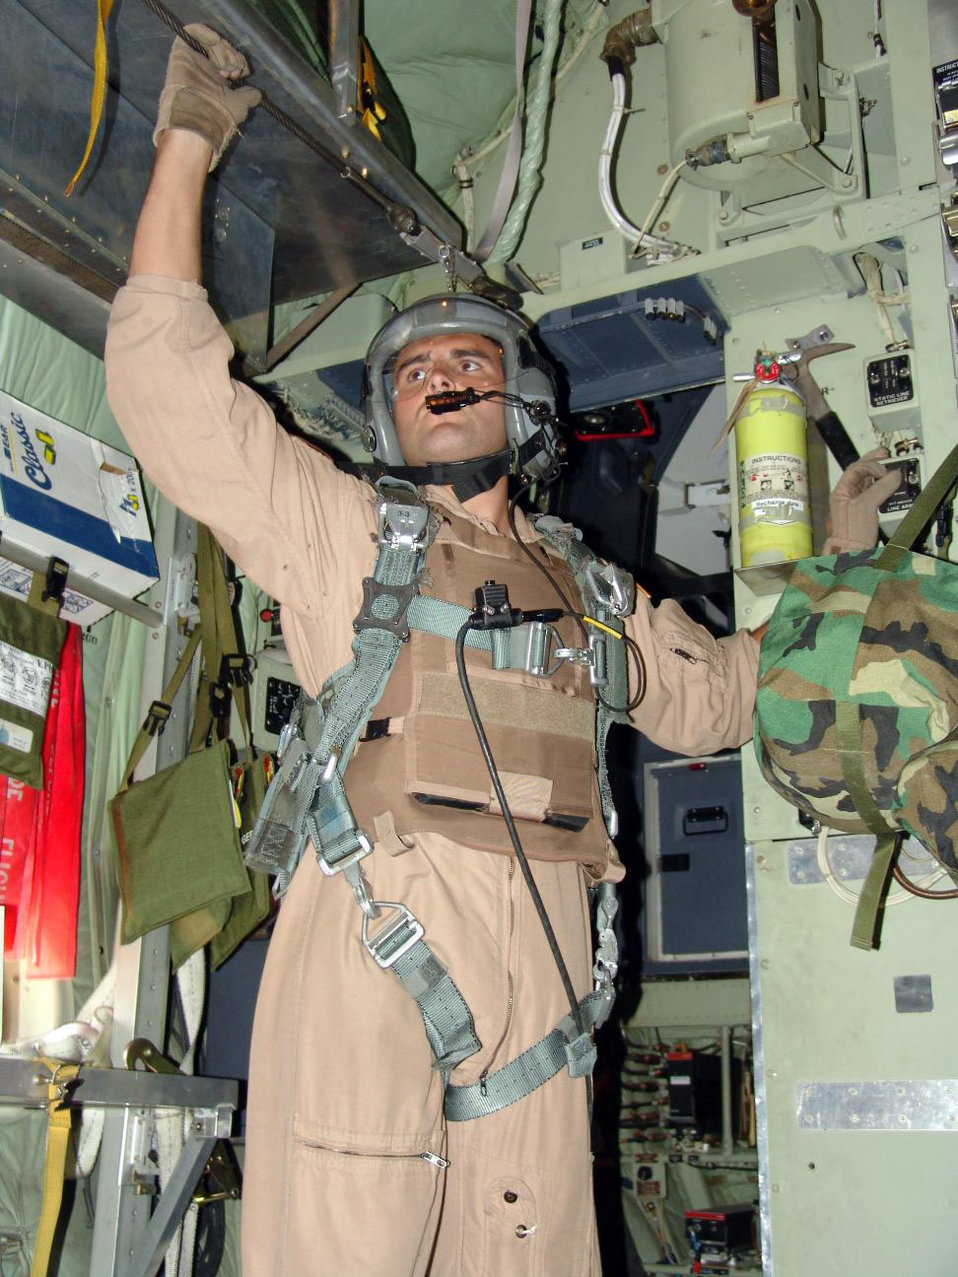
North Carolina guardsmen make combat airdrop in Afghanistan

SOUTHWEST ASIA -- Staff Sgt. Chad Wells prepares to open the ramp before an airdrop mission over an Afghanistan drop zone. Sergeant Wells is a C-130 Hercules loadmaster with the 738th Expeditionary Airlift Squadron at a forward-deployed location. He is one of six Air National Guard aircrew members from the North Carolina Air National Guard's 156th Airlift Squadron deployed here.